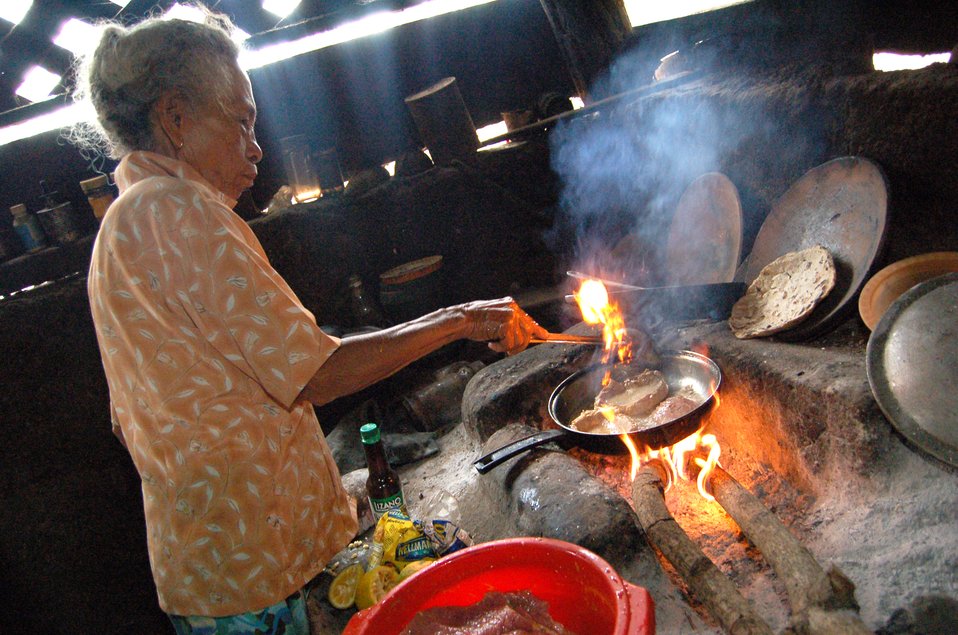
Nicaraguan lifestyle proves hard, offers valuable lessons

Luisa Palacio-Cortez, the 83-year-old woman who lives in a two-room house next to Camp Red Horse, cooks beef for her family's evening meal. Beef is a rarity for her and her family. She said they mostly live on beans, rice, tortillas and sometimes one of the chickens that run around their property.